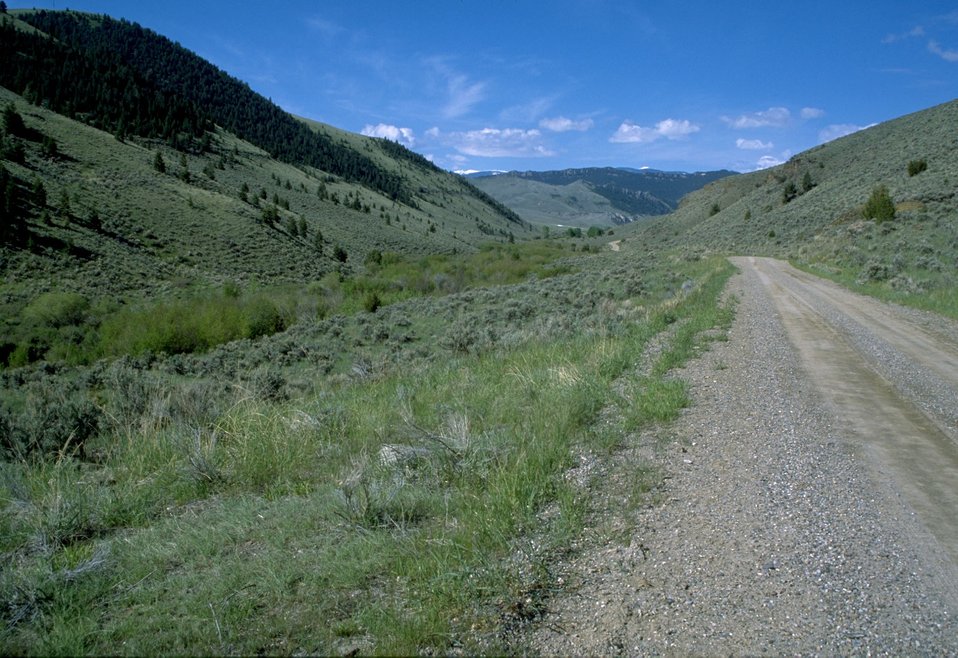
Green hillside and sagebrush along a road in the Pipestone Hills